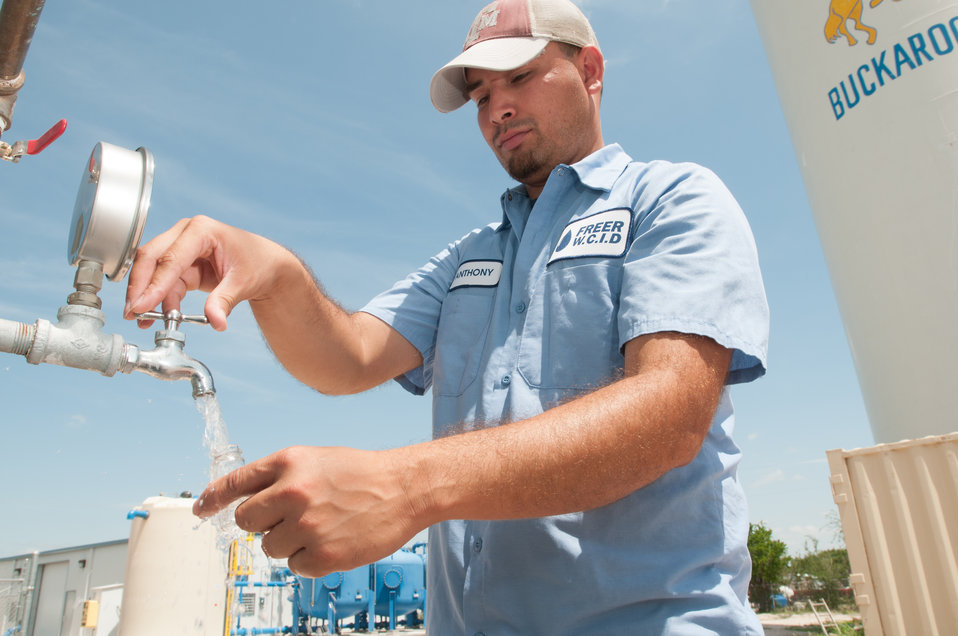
Anthony Arredondo takes a processed water sample at the Freer Water Control and Improvement District Arsenic Removal System Site in Freer, TX on Tuesday, June 18, 2013.

Freer Water Control and Improvement District (FWCID) benefits from the financial assistance of the U.S. Department of Agriculture (USDA) Rural Development (RD) to complete a two-phase approach to meeting the city’s water supply and safety needs, on Tuesday, June 18, 2013. Although, the naturally occurring arsenic levels have remained constant for more than a century, the Environmental Protection Agency (EPA) safe level standards have established lower levels of arsenic to be safe for human consumption. To meet those levels FWCID approached USDA and was awarded a $986,000 loan for Phase I, to install two new water wells, each rated at 167 gallons per minute (creating a total of eight wells); 13,600 feet of well collection lines; and 15,000 linear feet of well control line to remotely control the well pumps and the 1,000,000 gallon holding tank at the well facility, which supplies water to the new Arsenic Removal System (Phase II). Previously, water was manually controlled by personnel who knew when and how long to manually opened and closed water valves or started well pumps to ensure holding tank levels were within operating levels during peek and slack times of the day. Phase II was a combination of a $1,832,000 loan and a $1,258,750 grant, which provided for the customized arsenic removal system, seen in these photos. The system includes a new 3,530 sp. ft. facility, on a .76-acre site, and houses the operations room, computer and power system, laboratory room, and pump systems. The entire operation can be monitored through a desktop computer interface system. The computer-controlled system ensures raw water is fed to the pump system, which works in sequence to maintain a constant pressure to the system, when needed to pump water through (blue) arsenic removal absorber vessels, and then to ground storage tanks that feeds the residential and commercial needs of the city. Samples of water are periodically tested; and so far the arsenic levels have been below 1 part per billion (PPB), well under the 10 PPB limit.